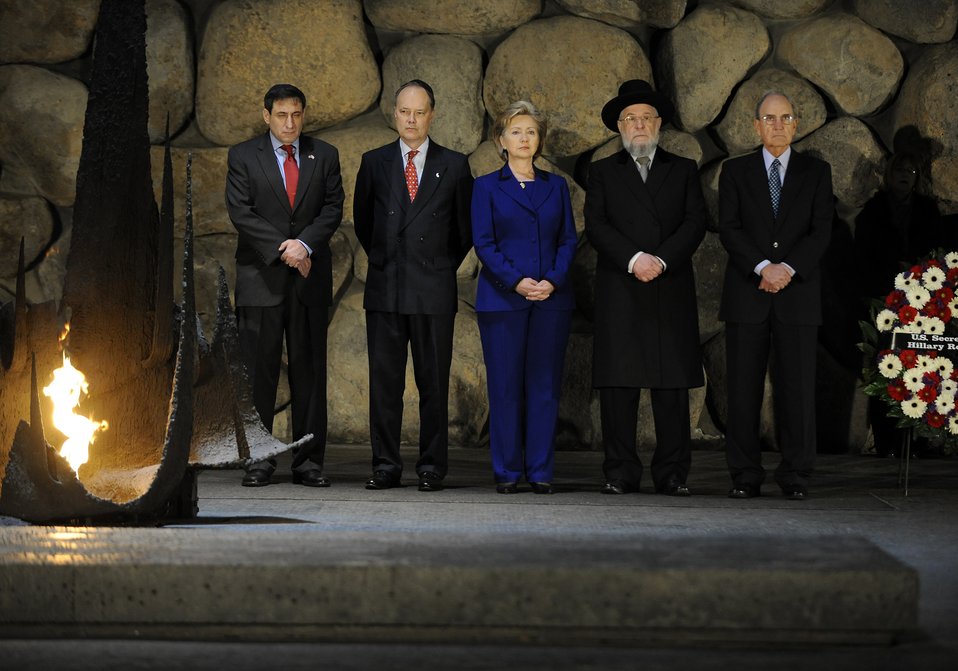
Secretary Clinton Lays a Wreath in the Hall of Remembrance

U.S. Secretary of State Hillary Clinton relights the eternal flame and lays a wreath in the Hall of Remembrance in Jerusalem March 3, 2009.